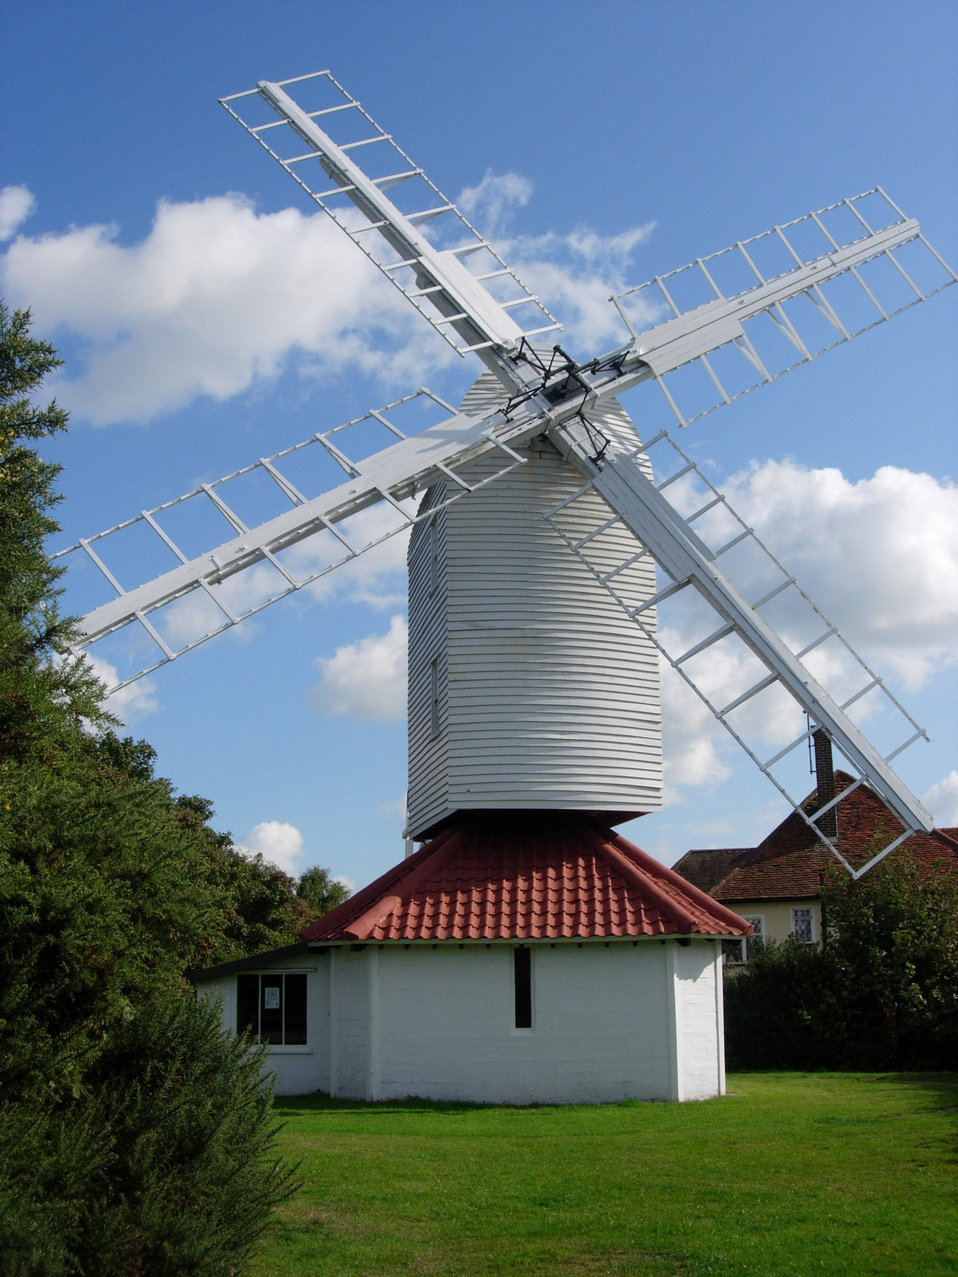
Thorpeness windmill

Windmill in the village of thorpeness in suffolk.